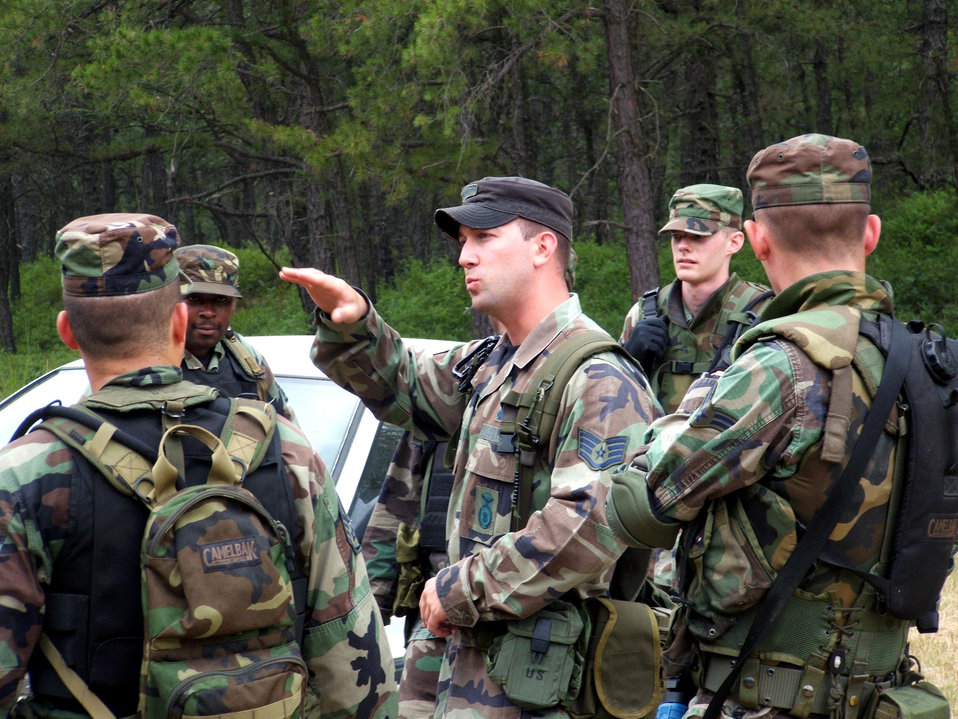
Contingency skills training

Staff Sgt. Jason Venturella (center) briefs Airmen on urban tactics during the Integrated Contingency Skills Training Course 06-4 at Naval Air Engineering Station Lakehurst, N.J., on Thursday, June 22. More than 165 students are participating in the course. Students also learn convoy training in preparation for deployments. The training is taught by staff at the Air Mobility Warfare Center's 421st Combat Training Squadron.